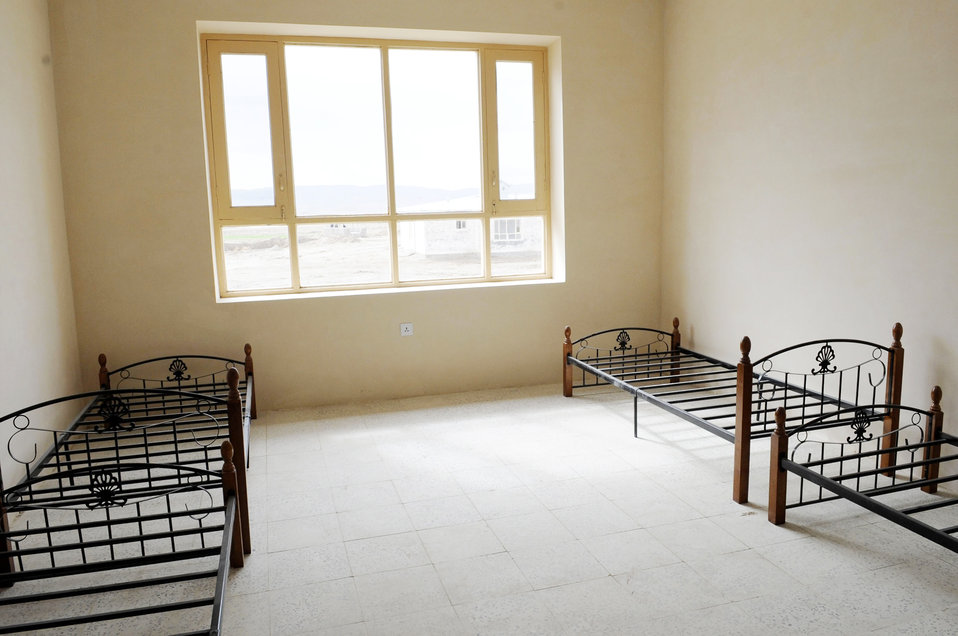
American servicemembers help bring education to Afghan community

The opening of the Sheik Mati Boy's High School shows the accomplishments the provincial reconstruction team and the people of the Zabul province have made Feb. 25, 2010, in Qalat City Afghanistan